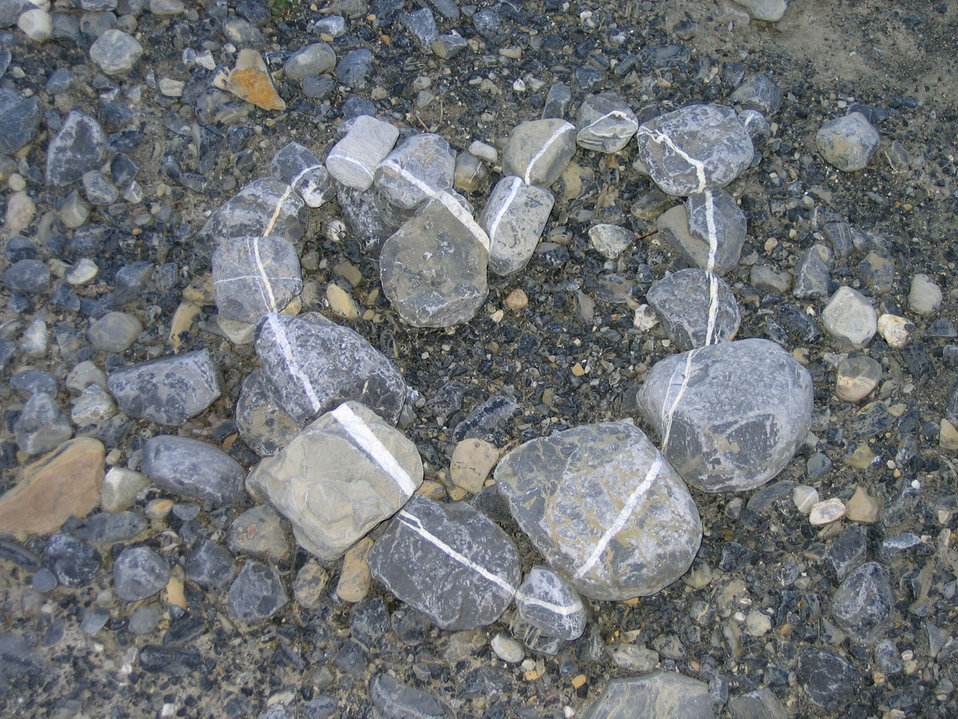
Heart

Found on near berg lake campground.